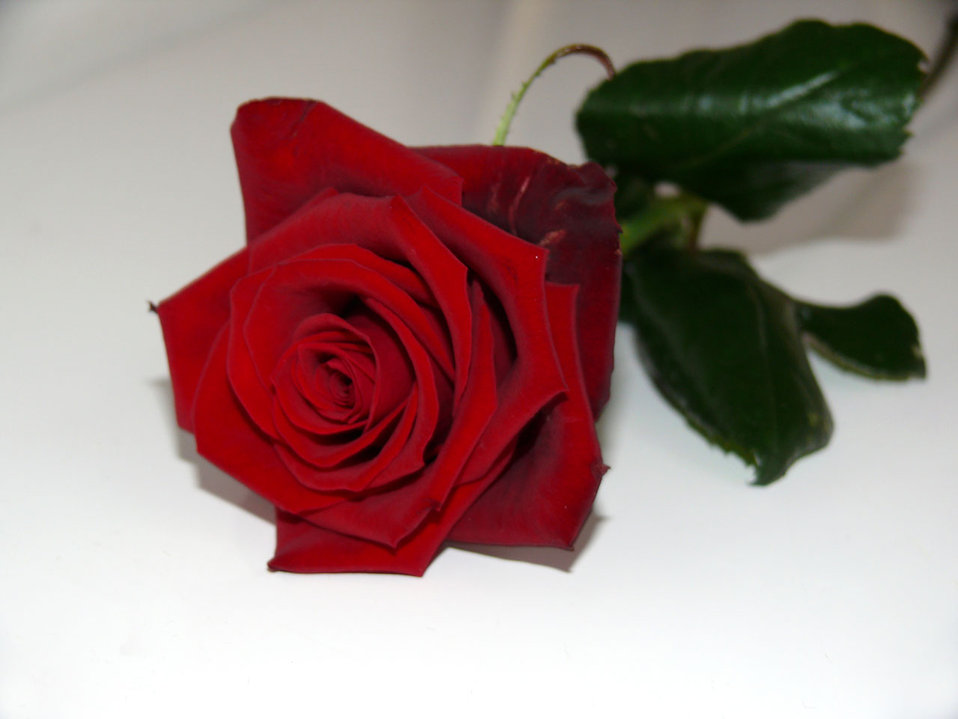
Rose

Red rose....